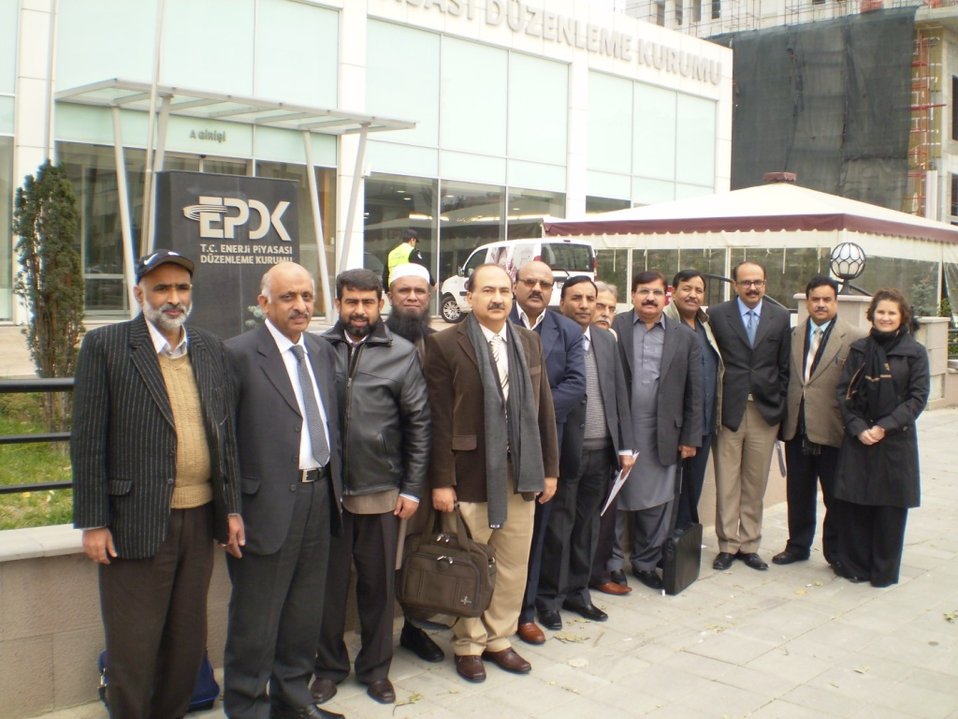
Delegates to Turkey under the Utility Exchange Program

USAID Power Distribution Program in liaison with United States Energy Association (USEA) organized a Utility Exchange Program in Istanbul and Ankara Turkey from November 1 2 - 19, 2011.Twelve delegates were selected from 9 DISCOs of Pakistan through a structured nominations and a selection process. The delegates visited the following number of power companies in Turkey:
1. BEDAS - Baskent Electricity Distribution Company, Ankara
2. TEDAS -Turkish Electricity Distribution Company, Ankara
3. AYEDA- Electricity Distribution Company, Istanbul
4. BEDAS - Electricity Distribution Company, Istanbul
The main focus of the Program was learning best practices and functions in Commercial Management, Financial Management and Customer Information Systems.